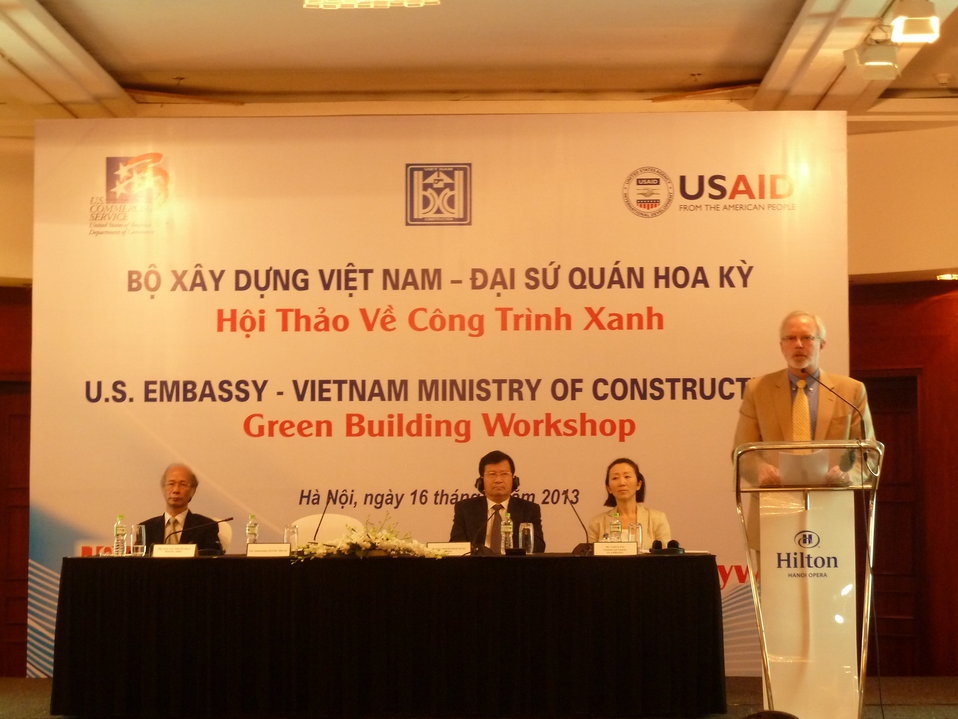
U.S. Ambassador David Shear Speaks at Green Building and Energy Workshop

Hanoi, Vietnam
April 16, 2013